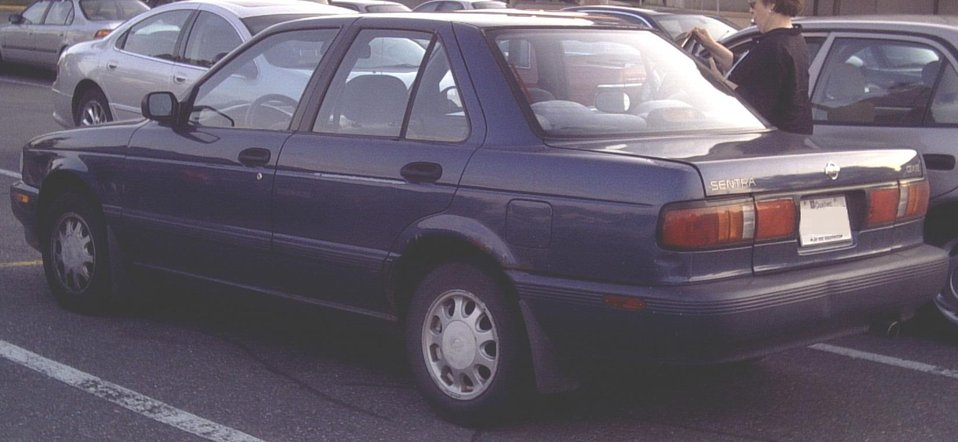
Licensing